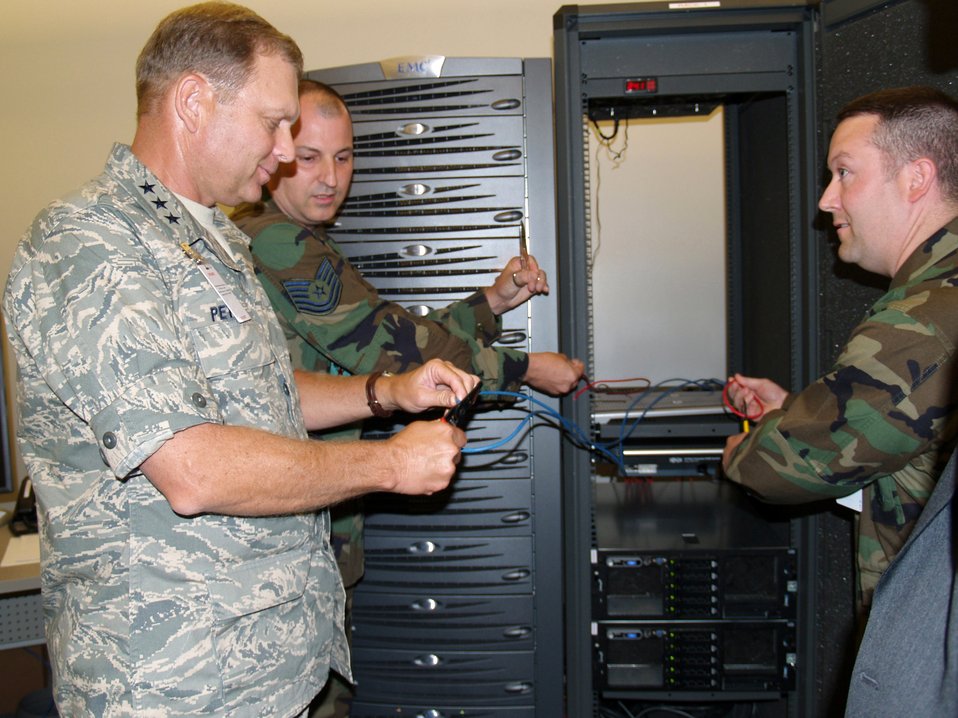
Virtualized servers saving time, money and power

As part of a demonstration at the Global Cyberspace Integration Center, Lt. Gen. Michael W. Peterson, Tech. Sgt. Rob Eubank and Maj. Lanny Greenbaum clip wires to create a